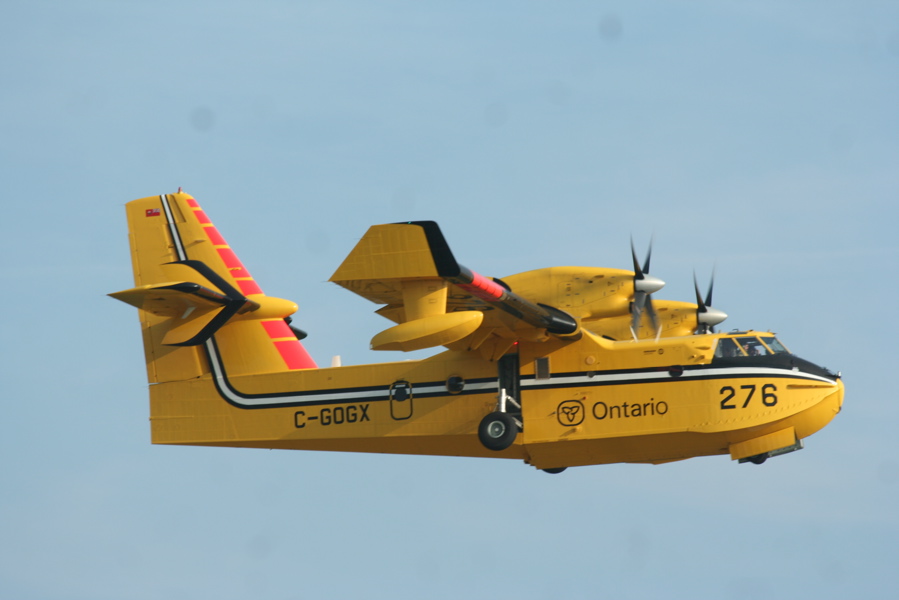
Canadair CL-415 operating on 'Fire watch' out of en:Red Lake, Ontario, Canada, 2007.